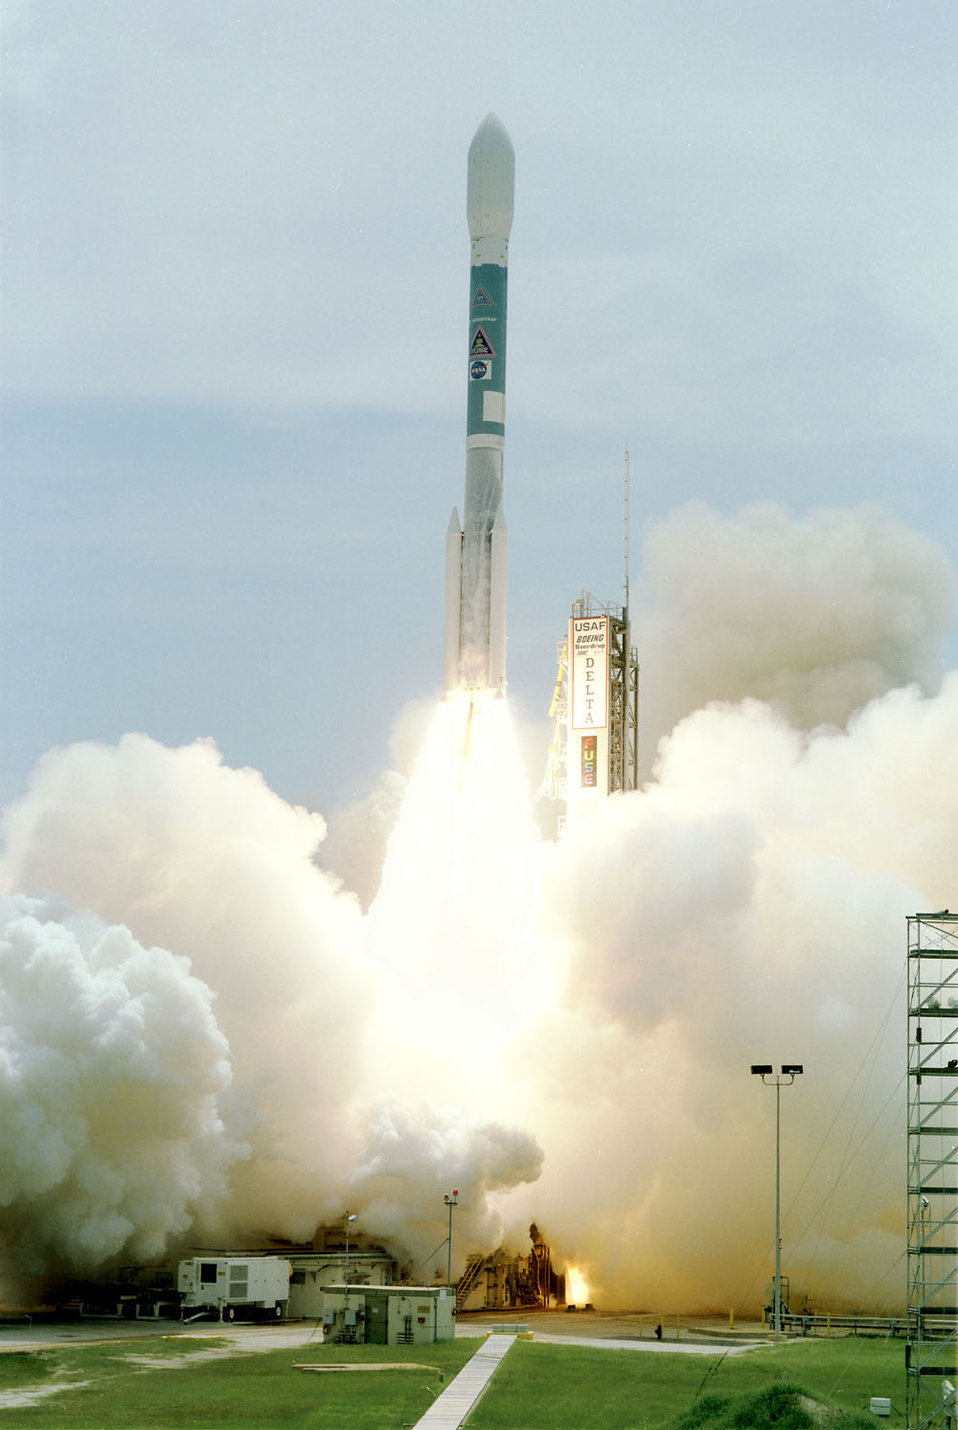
Delta II liftoff

CAPE CANAVERAL AIR FORCE STATION, Fla. --Clouds of smoke and steam billow around the Boeing Delta II rocket as it roars into the sky after liftoff. The rocket is carrying NASA's Far Ultraviolet Spectroscopic Explorer (FUSE) satellite. FUSE was developed to investigate the origin and evolution of the lightest elements in the universe - hydrogen and deuterium. In addition, the FUSE satellite will examine the forces and process involved in the evolution of the galaxies, stars and planetary systems by investigating light in the far ultraviolet portion of the electromagnetic spectrum.